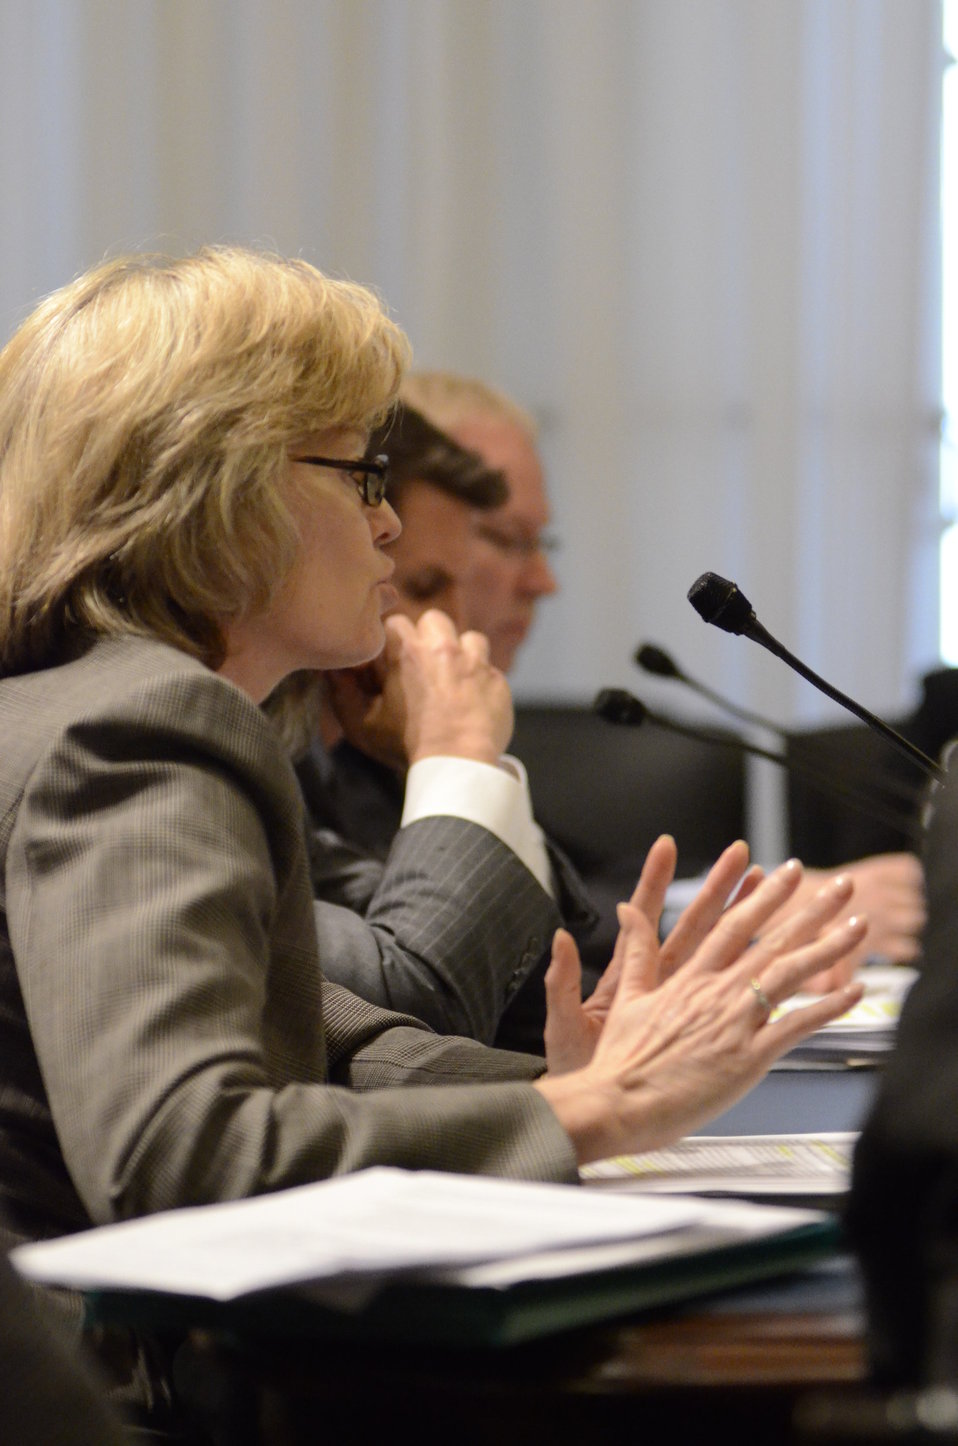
President and Chief Executive Officer, American Forest and Paper Association Donna Harman testifies on Retailers & Entertainers Lacey Implementation & Enforcement Fairness Act & Freedom from Over-Criminalization & Unjust Seizures Act at the Longworth House Office Building in Washington, D.C. on Tuesday, May 8, 2012.